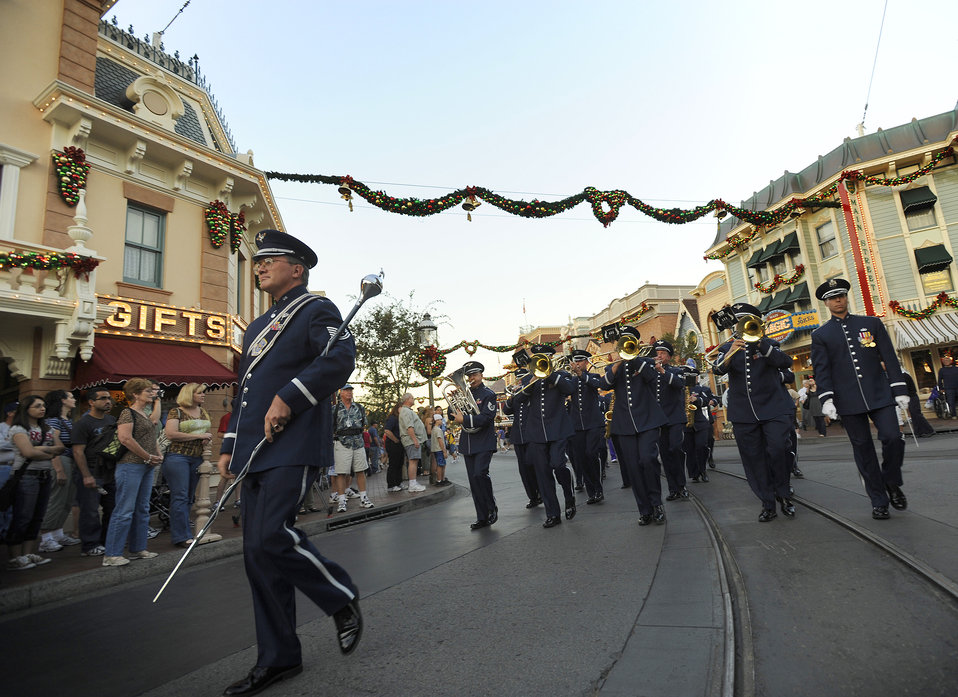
Air Force Week Los Angeles

Marching band members of the U.S. Air Force Band of the Golden West perform down Main Street U.S.A. at the Disneyland Resort in Anaheim, Calif., Nov. 17. The band is performing during Air Force Week Los Angeles, an event designed to educate the local population about the Air Force's capabilities and missions through various activities and exhibitions in the Los Angeles area.